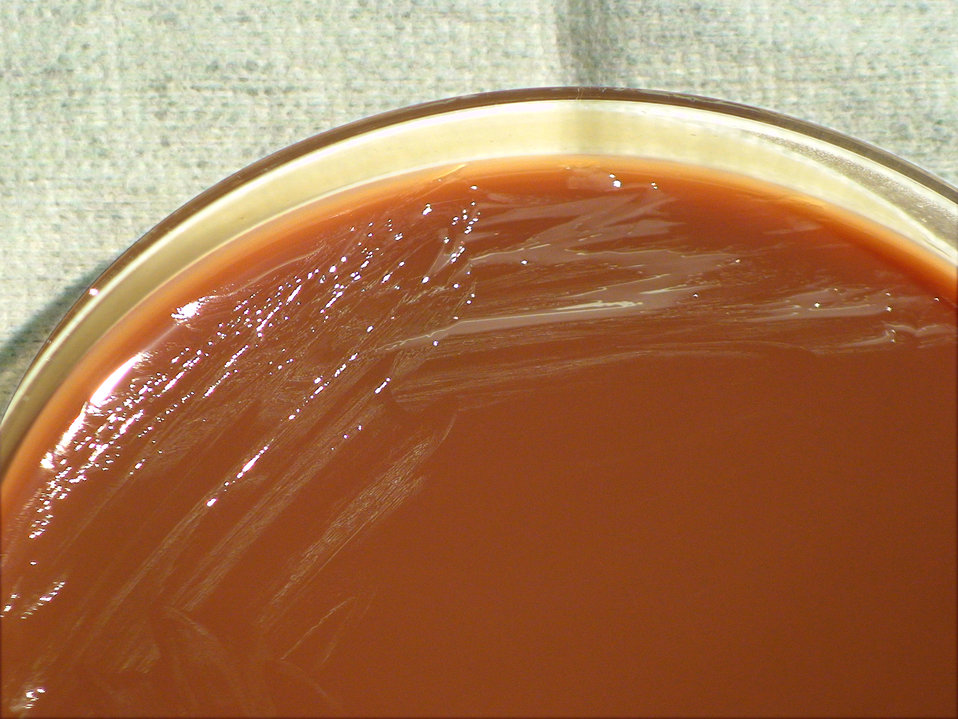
A closer view of PHIL 12368, this photograph depicts the colonial morphology displayed by Gram-negative Brucella abortus bacteria, which was grown on a medium of chocolate agar, for a 24 hour time period, at a temperature of 37�C. Also see PHIL 12397, for a view of B/ abortus colonial growth on the same medium and temperature, but for twice the time period (48hr). Brucella spp., including B. abortus, cause a disease known as brucellosis.